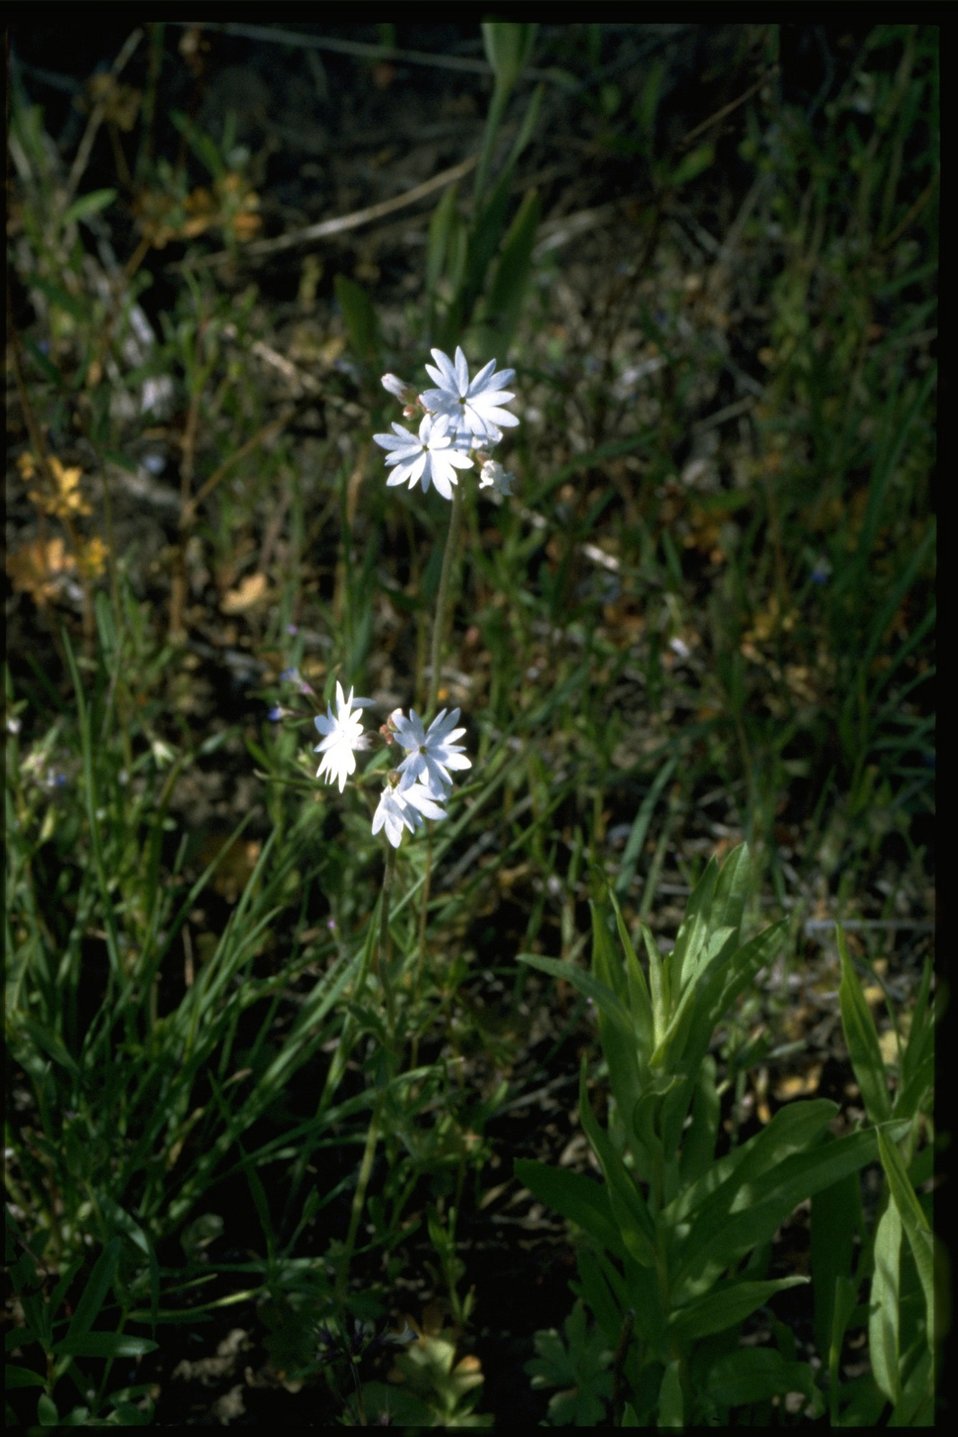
Farshot of Prairie Star wildflower (Lithophragma Sp.)